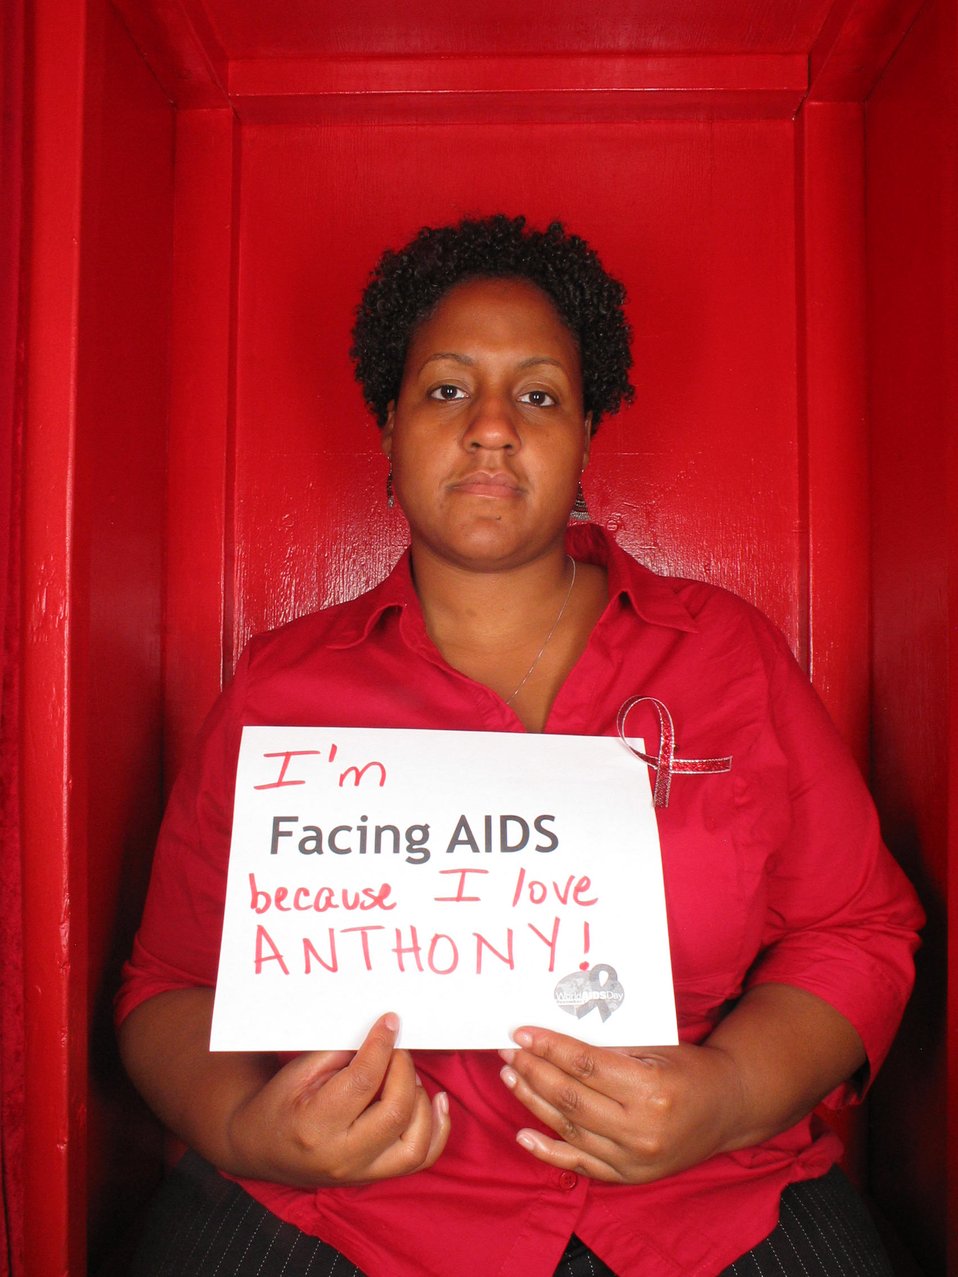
I'm Facing AIDS because I love Anthony!